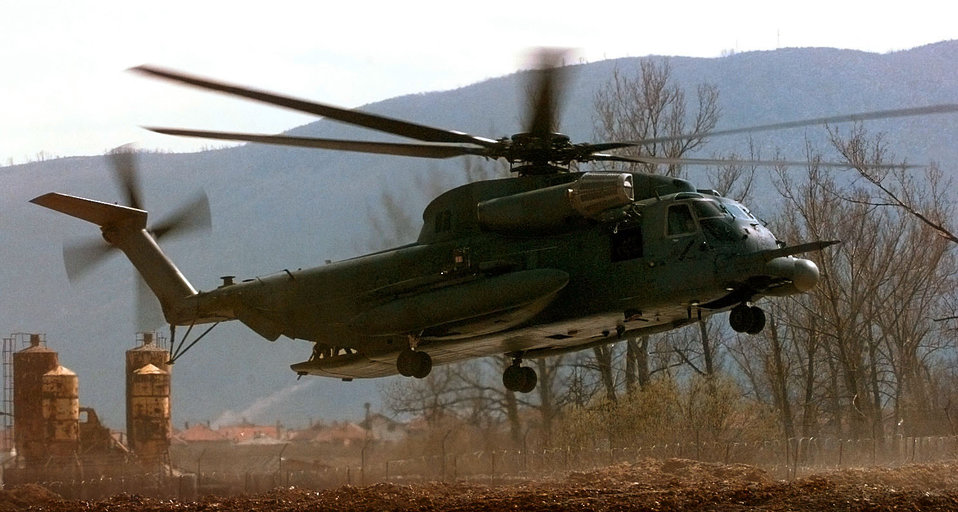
MH-53J Pave Low

FILE PHOTO -- The MH-53J Pave Low III heavy-lift helicopter is the largest, most powerful and technologically advanced helicopter in the Air Force inventory. The terrain-following and terrain-avoidance radar, forward-looking infrared sensor, inertial navigation system with global positioning system, along with a projected map display enable the crew to follow terrain contours and avoid obstacles, making low-level penetration possible.